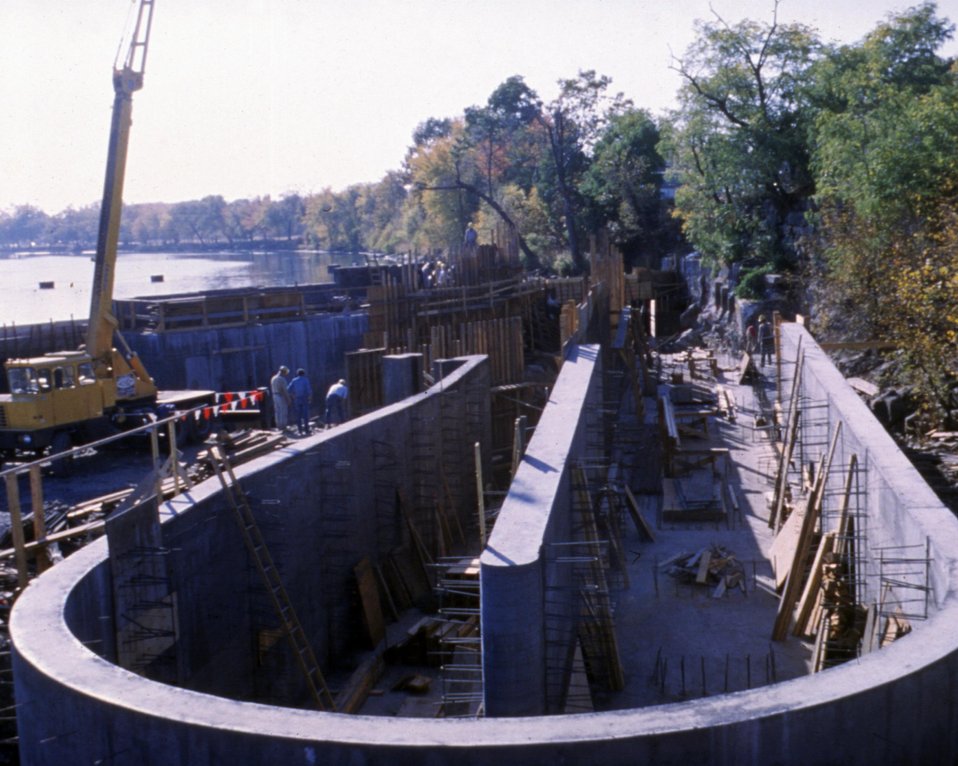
GENERAL VIEW OF FISH LADDER CONSTRUCTION.

THE DOE SMALL-SCALE HYDROPOWER PROGRAM CONSISTS OF 19 PROJECTS AND DEMONSTRATES THE VIABILITY OF SMALL-SCALE HYDRO-POWER WITH AVAILABLE TECHNOLOGY. THE BOOTT MILLS PROJECT, BEGUN IN OCTOBER, 1983, WENT ON LINE IN NOVEMBER, 1985. UTILIZING TWO KAPLAN TURBINES THAT PRODUCE A MAXIMUM OF 15,000 KILOWATTS, THE DAM PROVIDES A GROSS HEAD OF 35 FEET WITH AN ANNUAL STREAM FLOW OF 4,500 CFS.